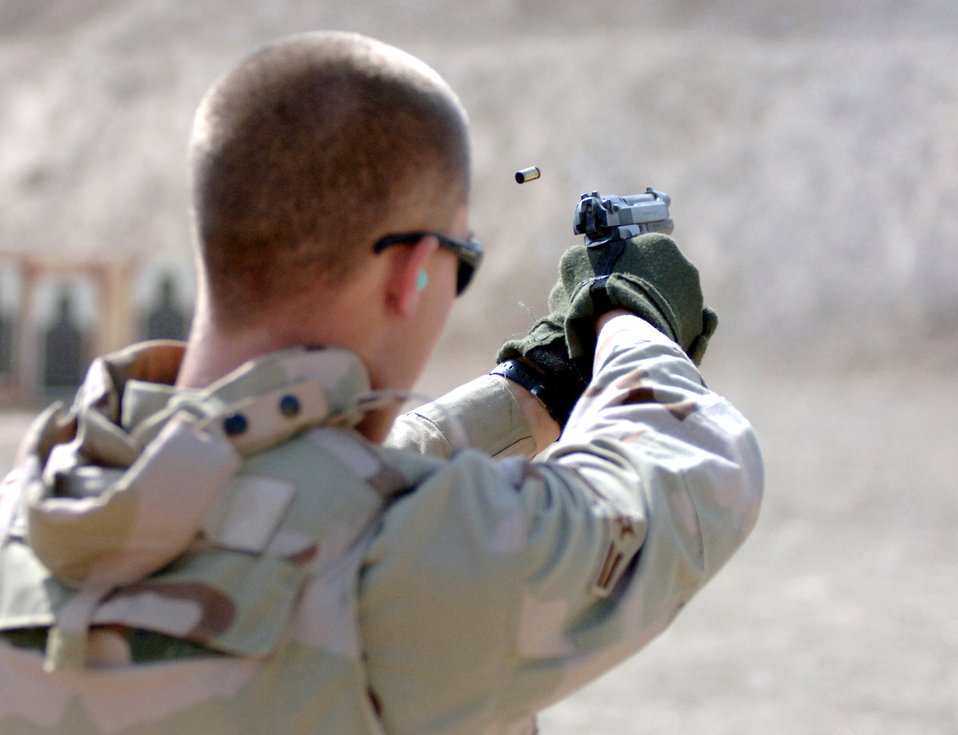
On target

Airman 1st Class Brandon Newton fires an M-9 Beretta at a match at Victory Base Complex, Iraq, on Monday, July 3. Nine teams from Sather Air Base and Iraqi New Al Muthana Air Base competed, testing their endurance, skill and marksmanship. The four-person teams were made up of deployed Airmen from various career fields. Airman Newton is assigned to the 447th Air Expeditionary Group, and is deployed from the 96th Services Squadron at Eglin Air Force Base, Fla.